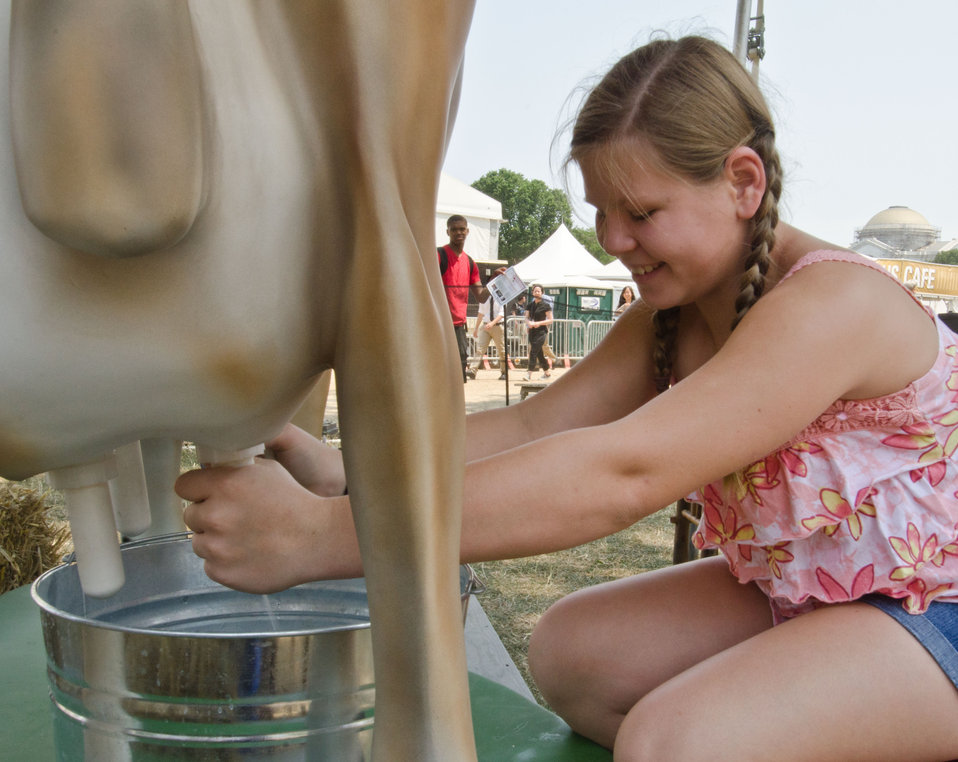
Kylie Hogue (11yrs.) takes a try at operating Maggie The Milking Cow that gives beginners and those with experience, a chance to test their skill at the Mississippi State University exhibition area at the 2012 Smithsonian Folklife Festival, on the National Mall in Washington, D.C. on Friday, June 29, 2012 Near by is the Mississippi State University Mobile Veterinary Clinic that serves the Northern Mississippi area by providing Spay and neuter services to those in need, and provides medical experience for students. One of the three themes this year is “Campus and Community.” It celebrates the 150 years of the USDA and the Land-Grant University System. The U.S. Department of Agriculture (USDA) and the Land-Grant system extend education across the country, contributing to American agriculture success and rural prosperity. “Campus and Community” has demonstrations, discussions, hands-on activities, and entertainment to that showcase the many ways that this partnership works to improve American agriculture and rural life.